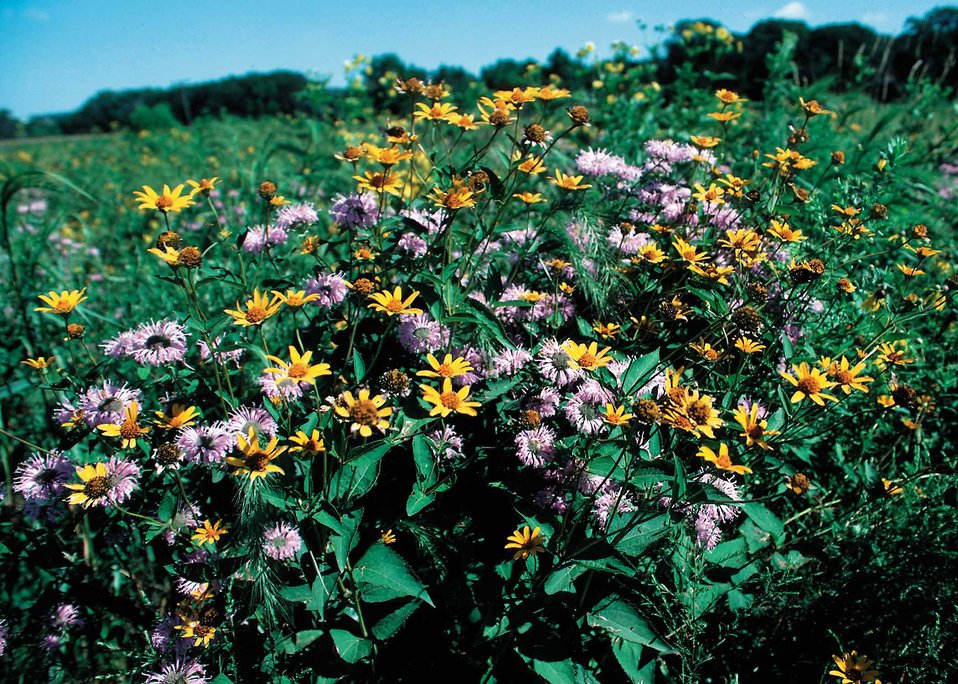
Mixture of prairie plants in eastern Iowa.